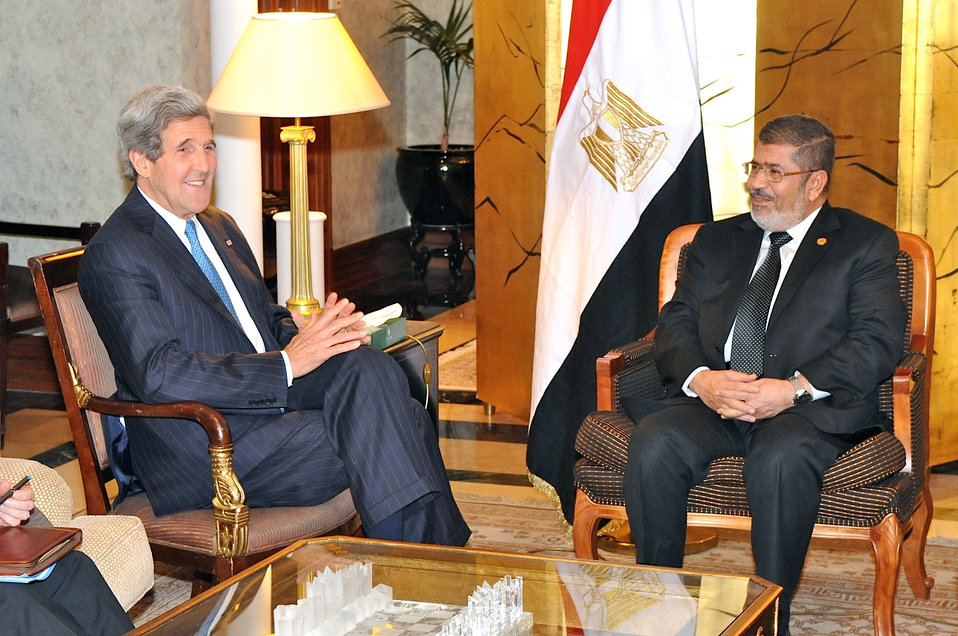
Secretary Kerry Meets With Egyptian President Morsy in Addis Ababa

U.S. Secretary of State John Kerry meets with Egyptian President Mohamed Morsy, as the two attend the 50th anniversary African Union Summit in Addis Ababa, Ethiopia, on May 25, 2013.